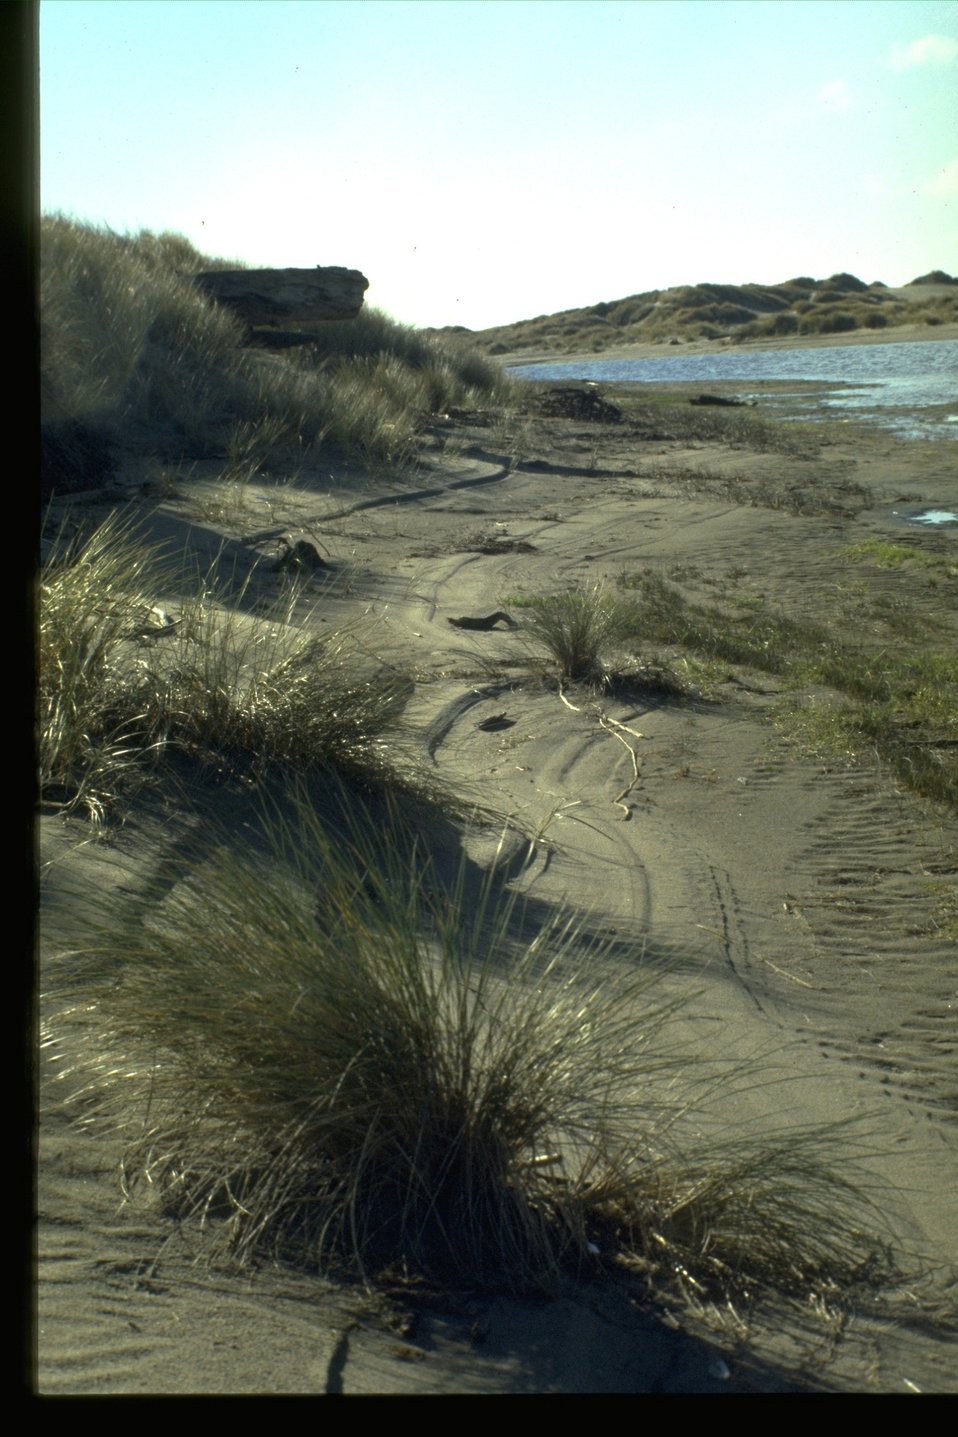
New River Beach on the Foredune side.